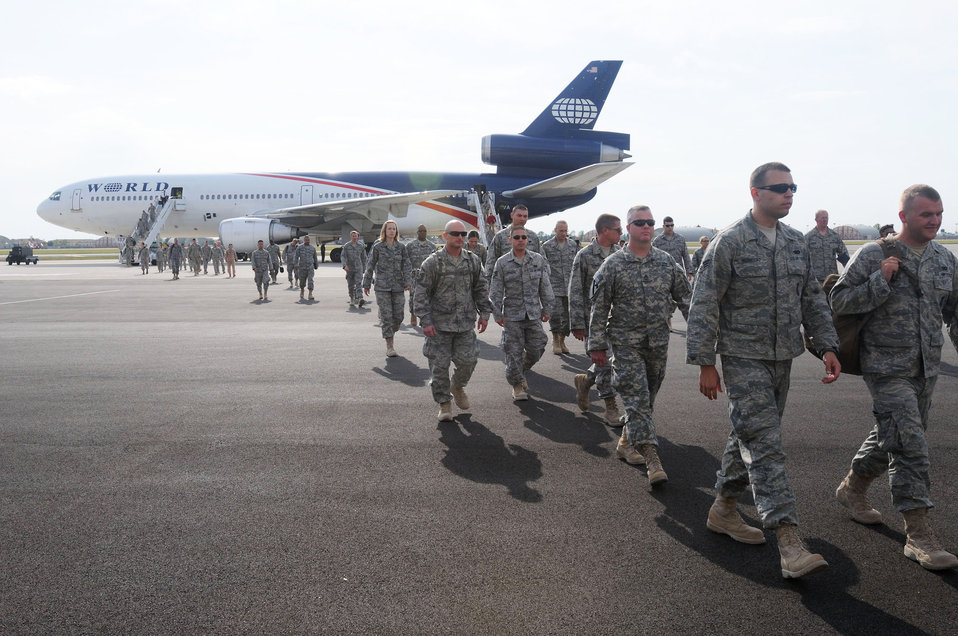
Aviano Airmen open doors to new NATO terminal

Military servicemembers returning from deployment disembark a government chartered aircraft arriving from an air base in Southwest Asia Sept. 11, 2009, at Aviano Air Base, Italy. The servicemembers were amongst the first to use the new passenger and air freight terminal at Aviano AB since it opened for passenger processing Sept. 10.